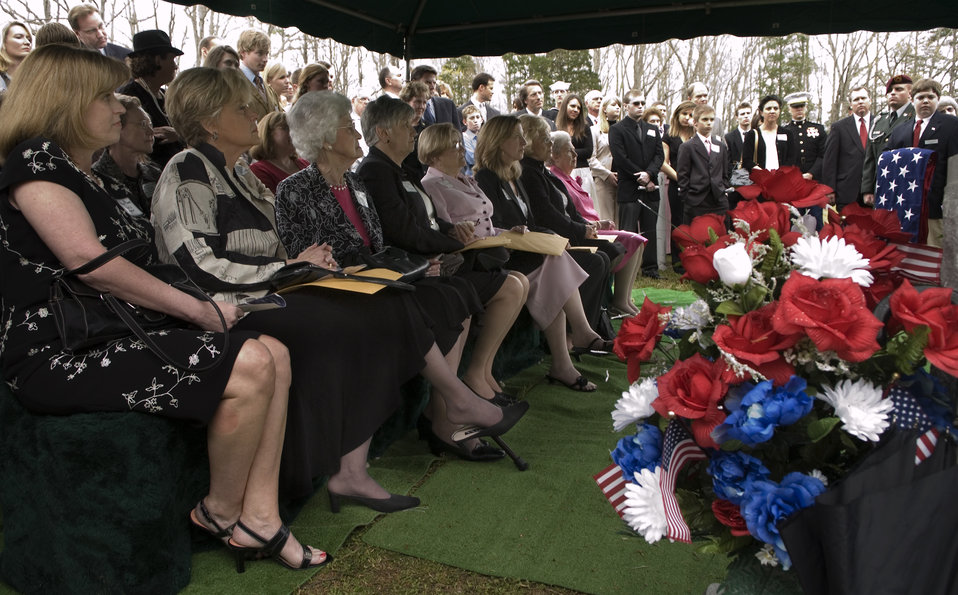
Pilot burial solves two mysteries

Family members of 2nd Lt. Robert Hoyle Upchurch attend a memorial service Saturday, April 8, 2006 in High Falls, N.C. He was killed when his P-40 Warhawk crashed in China in 1944 during bad weather. Lieutenant Upchurch was a member of the famed Flying Tigers during World War II and was listed as missing in action until his remains were identified last May by the Joint POW/MIA Accounting Command.